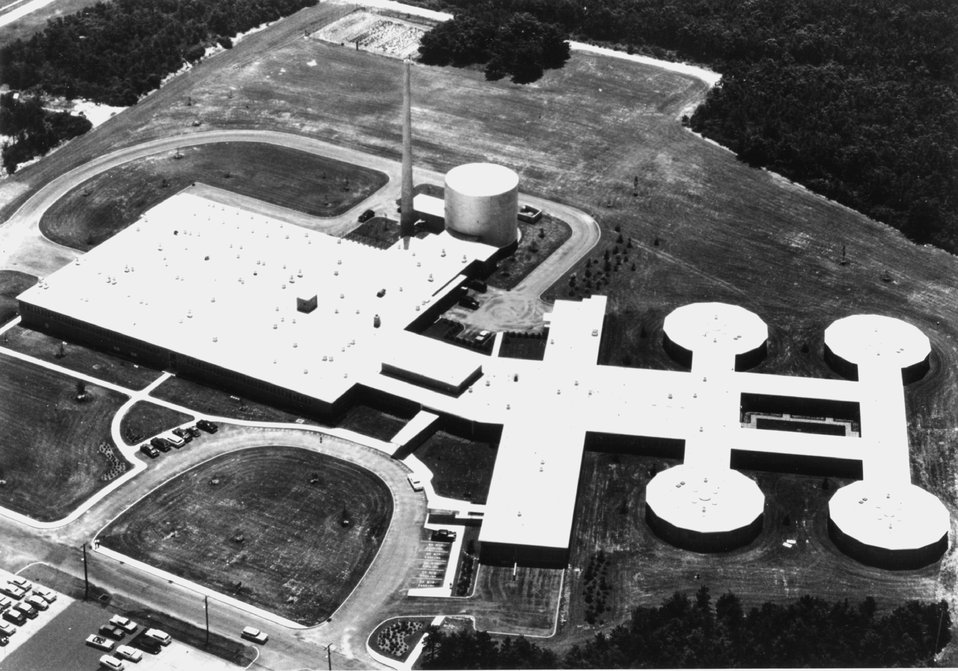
Brookhaven National Laboratory Medical Research Center photograph from the north. c. 1959